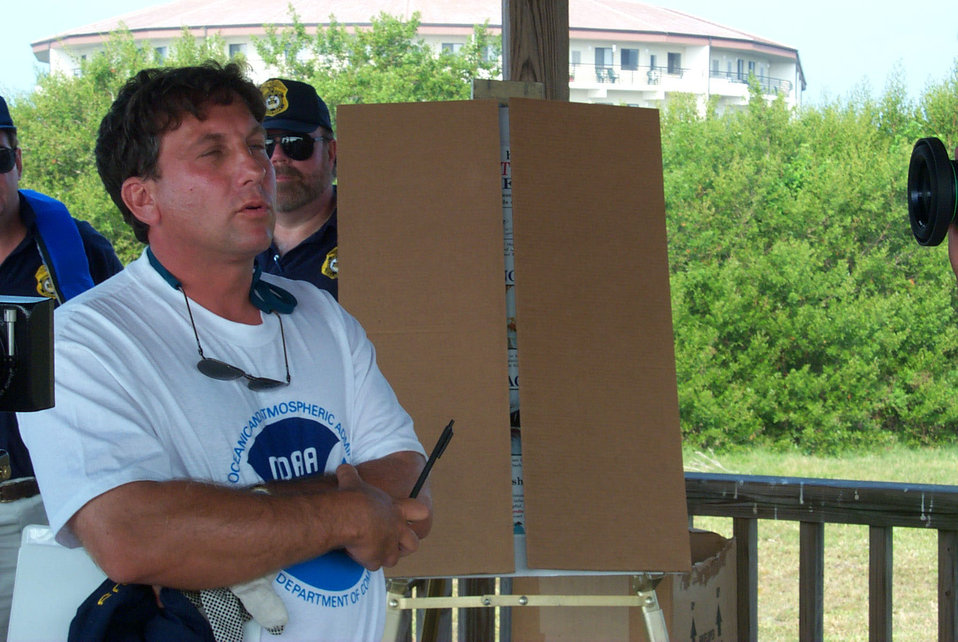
Scott Gudes delivers a welcome speech to the volunteers that joined the NOAA Restoration Center staff and Tampa Baywatch to assist in the monofilament clean-up.